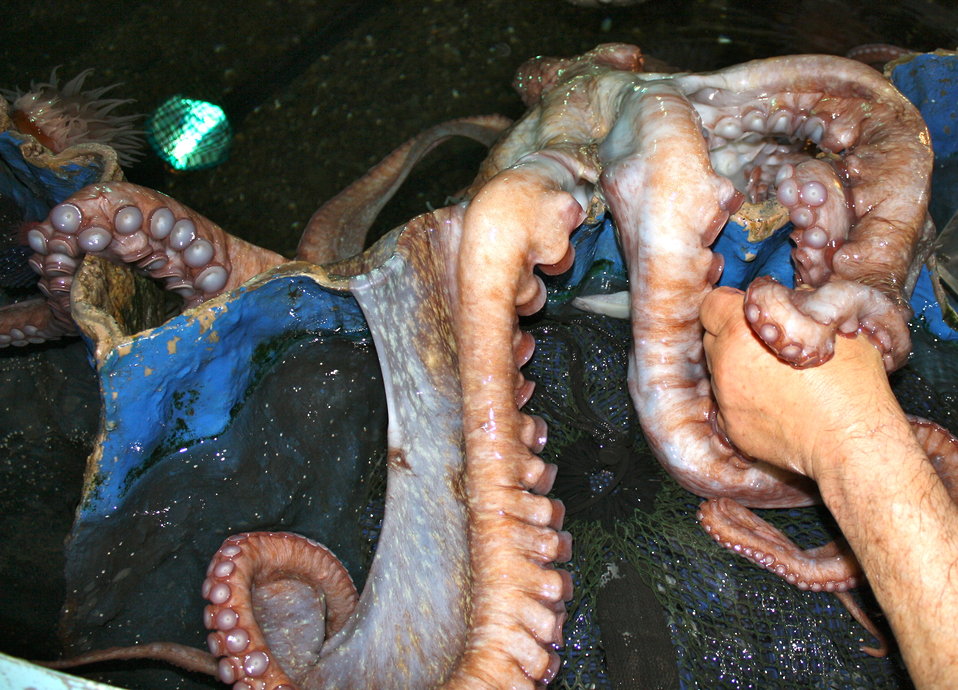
Octopus at the New England Aquarium.